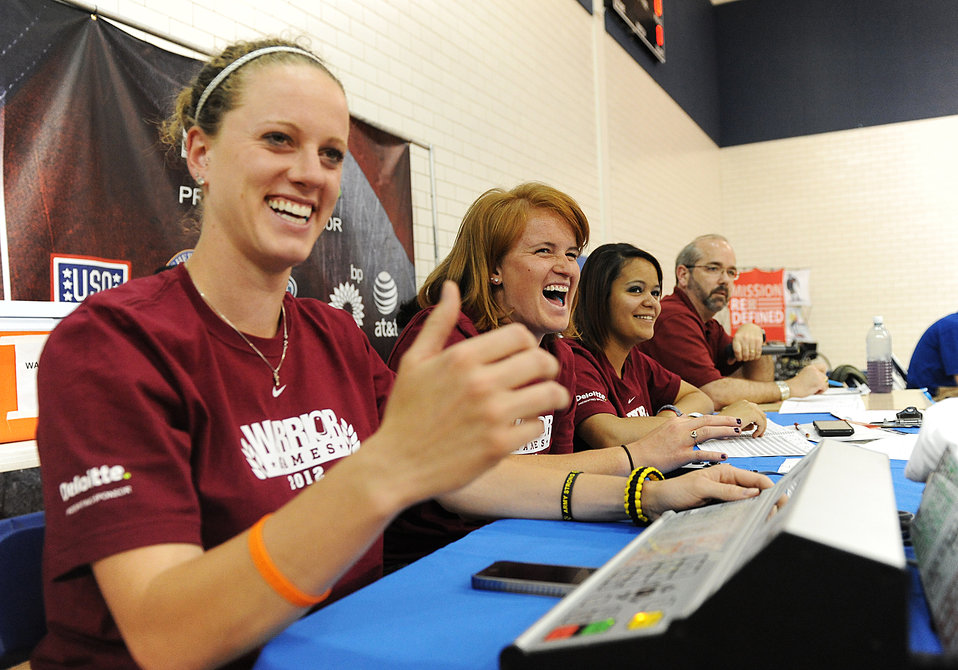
Warrior Games

From left: Caitlyn Riley, Jojo Ogg, Jarye Mack and Steve Austin reacts to a referee as they work the scorers table during a wheelchair basketball game between the Air Force and the Navy teams during Warrior Games at the U.S. Air Force Academy in Colorado Springs, Colo., May 3, 2012. The group are volunteers for the Warrior Games.